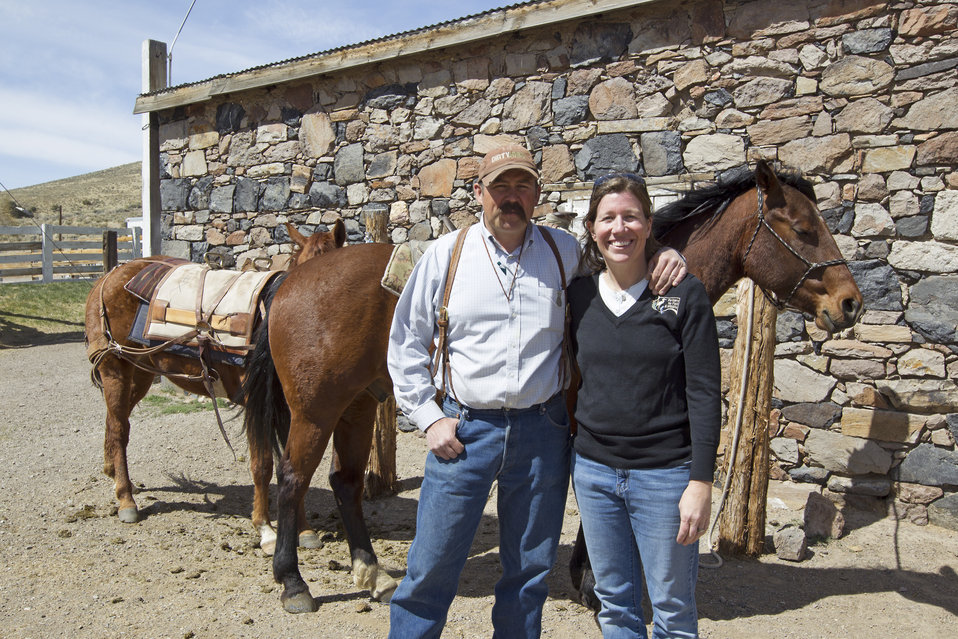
Landowner with Partners for Fish & Wildlife Program Biologist